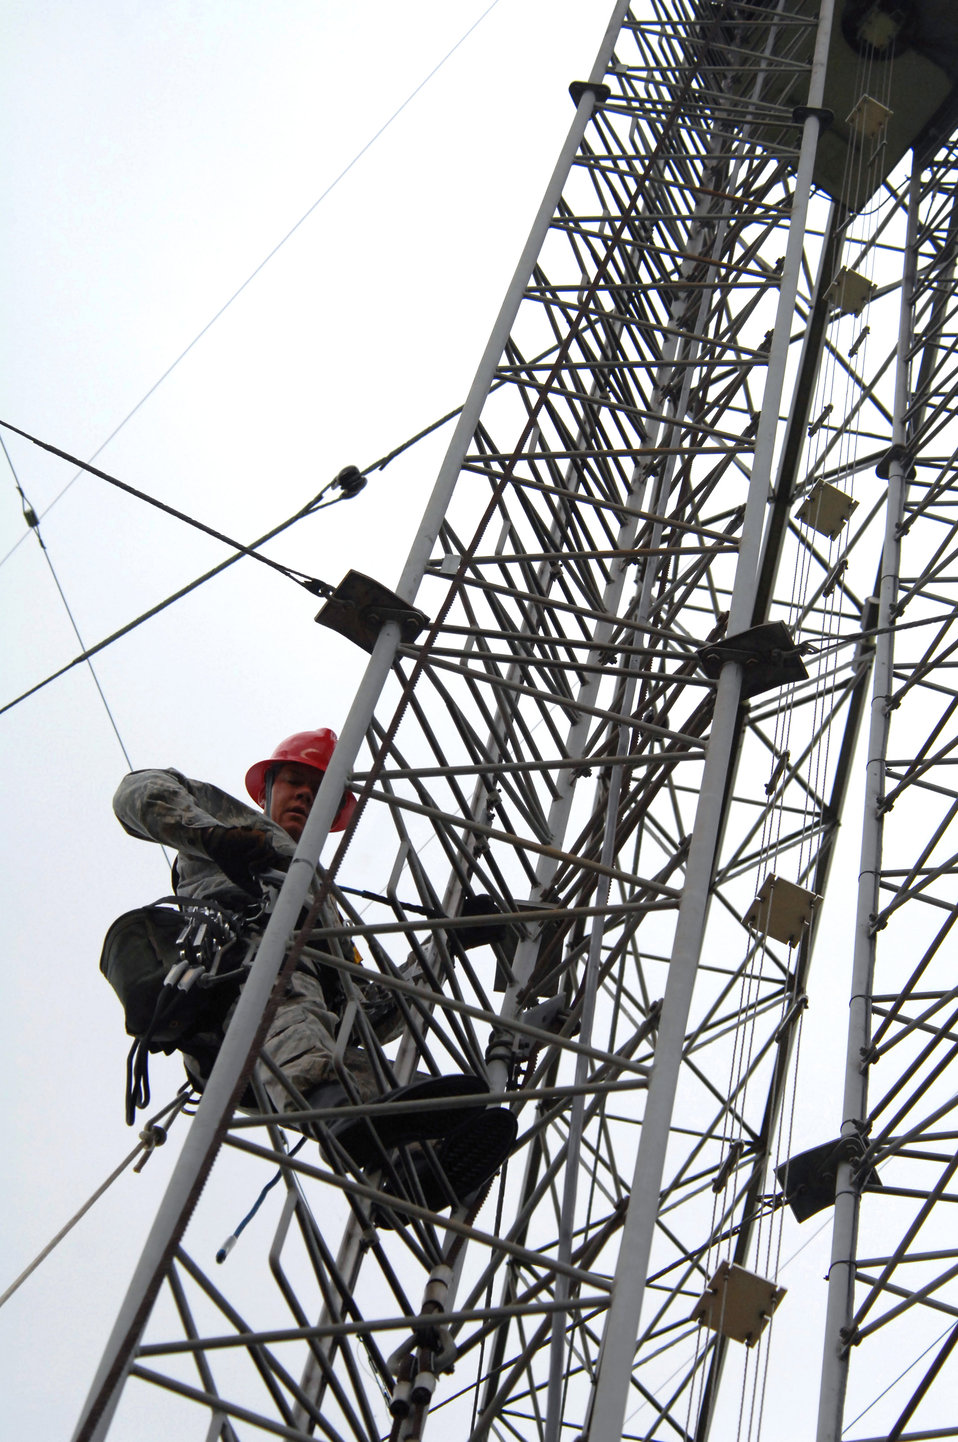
Airmen ensure communications capability for joint, coalition success

Tech. Sgt. Tim Daniel performs a preventative maintenance inspection of a radio tower Sept. 18, 2009, at Royal Air Force Barford, England. Sergeant Daniel is a member of the 1st Communications Maintenance Squadron cable and antenna theater maintenance team from Kapaun Air Station, Germany.